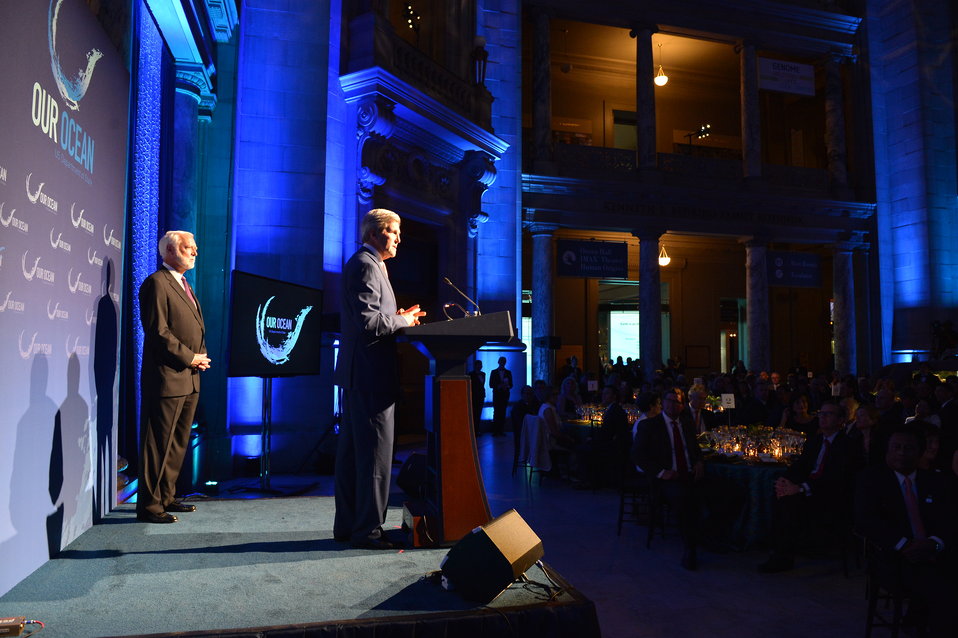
Secretary Kerry delivers remarks at the 'Our Ocean' Conference evening reception at the Smithsonian National Museum of Natural History Sant Ocean Hall in Washington, D.C. on June 16, 2014.